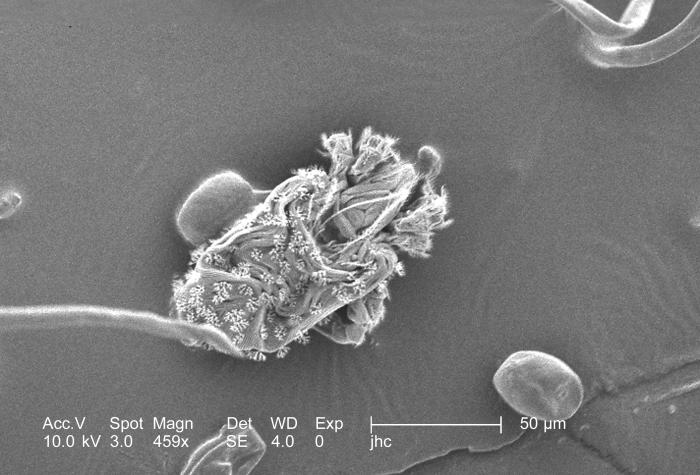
Under a magnification of 459x, this scanning electron micrograph (SEM) revealed the presence of numbers of mites from the specie Nanorchestes sp., Family Nanorchestidae. Members of this specie are free-living, fungivorous soil and leaf-litter/moss mites that were simply an incidental finding on the skin of this lizard. It is not a lizard associate per se, and certainly not parasitic. Under higher magnifications, i.e., PHIL 8808, 8809, the mite's exoskeletal complexities are better appreciated in their diaphanous majesty.